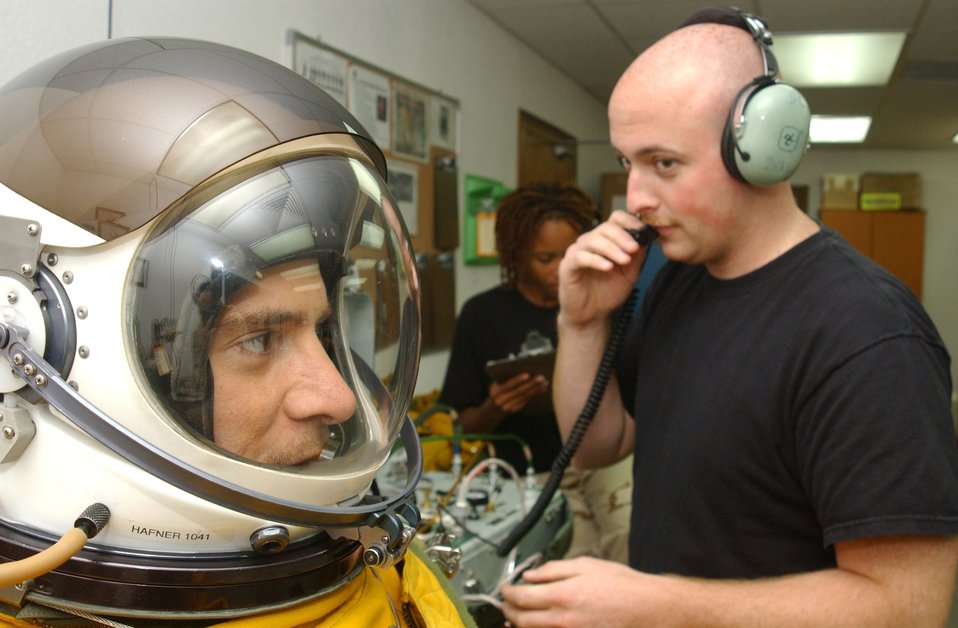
U-2 operations

Capt. Greg Hafner listens as Senior Airman Shawn Nyer begins pressurization of his flight suit while Senior Airman Nakia Newton works in the background. The captain breathed nearly pure oxygen for almost 35 minutes before taking off on a U-2 mission. Captain Hafner is a U-2 pilot and Airman Nyer is a physiological support specialist assigned to the 99th Expeditionary Reconnaissance Squadron.